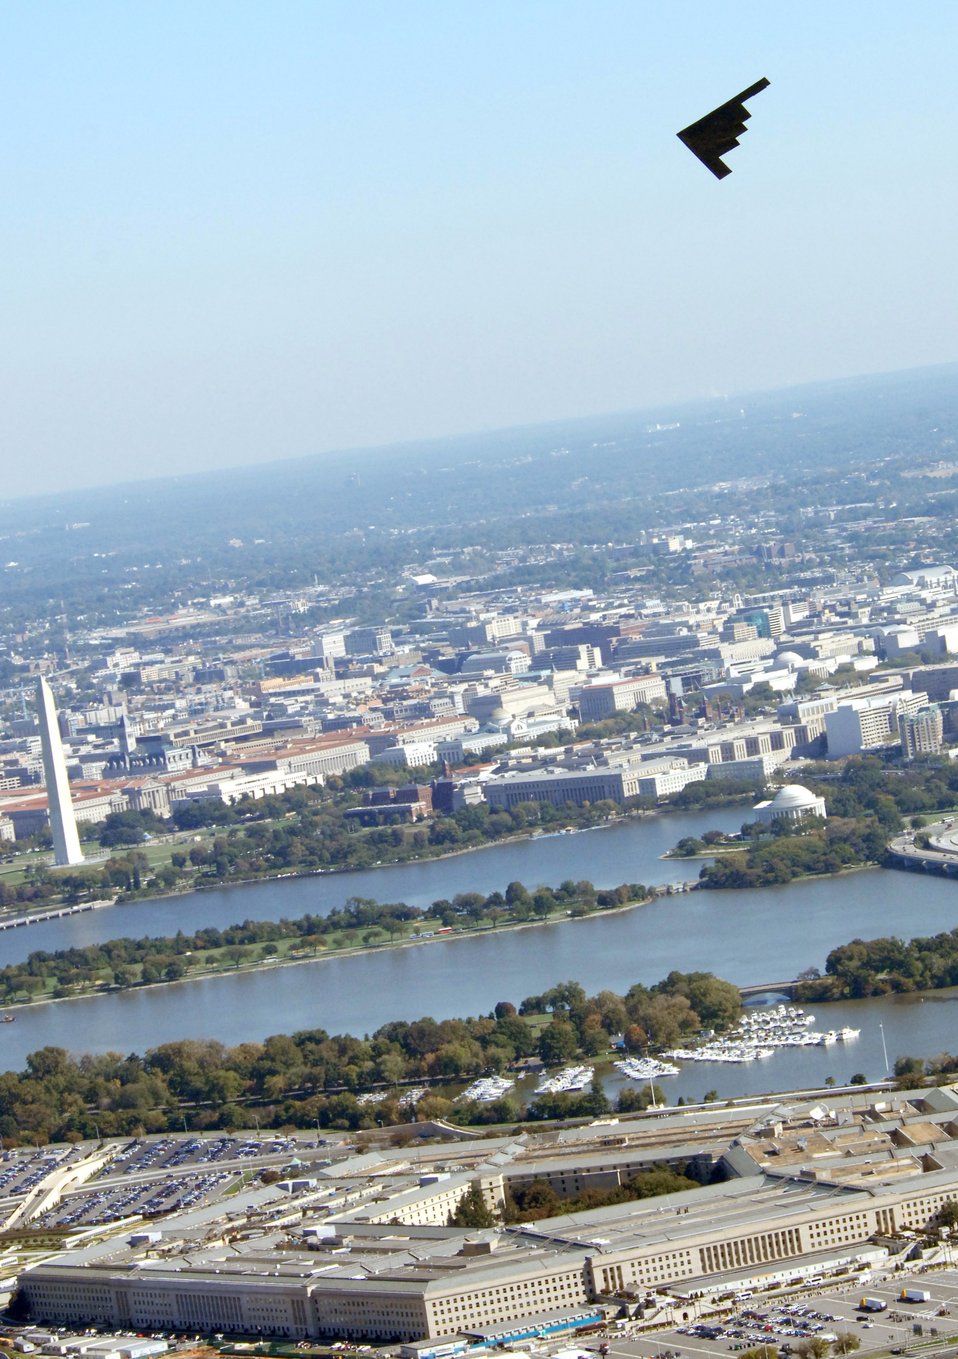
AF Memorial: Warming up for the big show

A B-2 Spirit II flies over the Air Force Memorial during a practice flight over the Oct. 13 in Arlington, Va. The memorial dedication ceremony will be held Oct. 14. An Air Force open house will be held near the Pentagon in conjunction with the dedication ceremony that will feature performances by the U.S. Air Force Band, the U.S. Air Force Honor Guard drill team, and a concert by country music performer LeeAnn Womack.